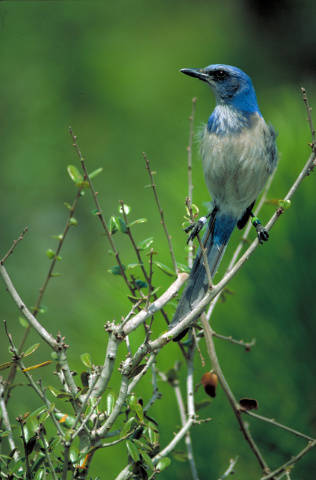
Florida scrub-jay

Scientific name: Aphelocoma coerulescens
Status: Threatened